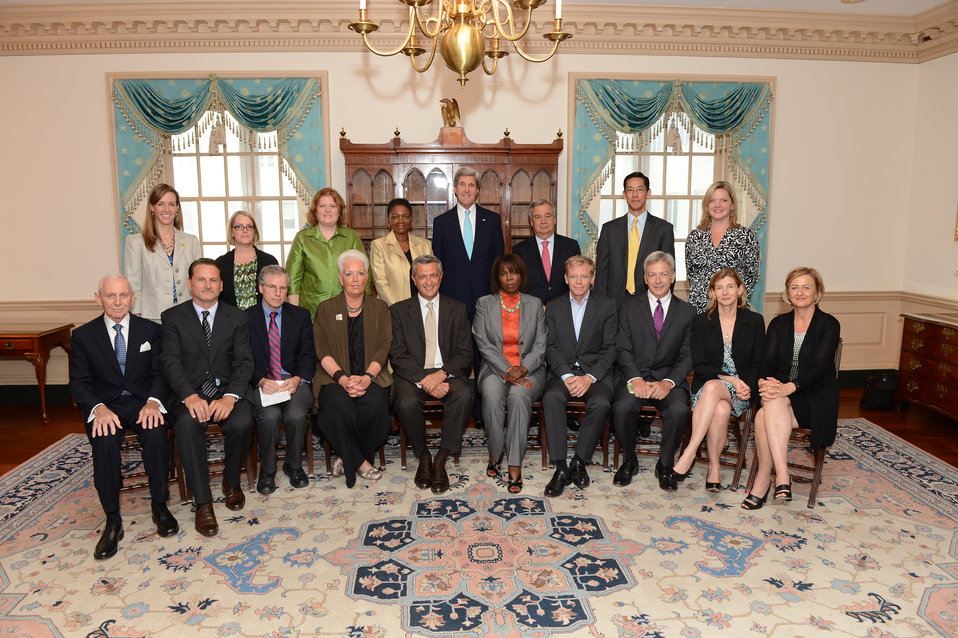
Secretary Kerry Meets With International Humanitarian Agency Heads

U.S. Secretary of State John Kerry meets with International Humanitarian Agency Heads at the U.S. Department of State in Washington, D.C., on July 23, 2013.